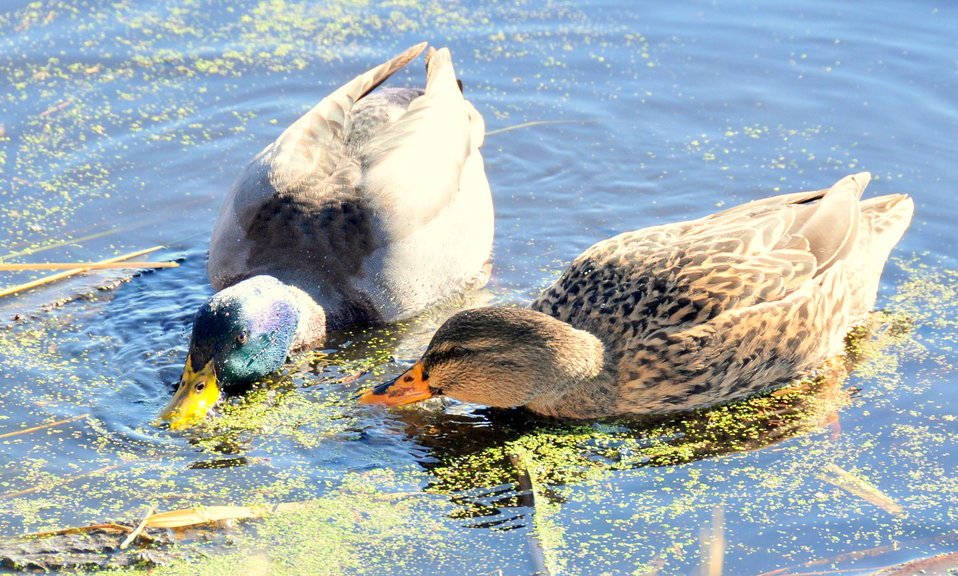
Mallard pair feeding on Duckweed 01